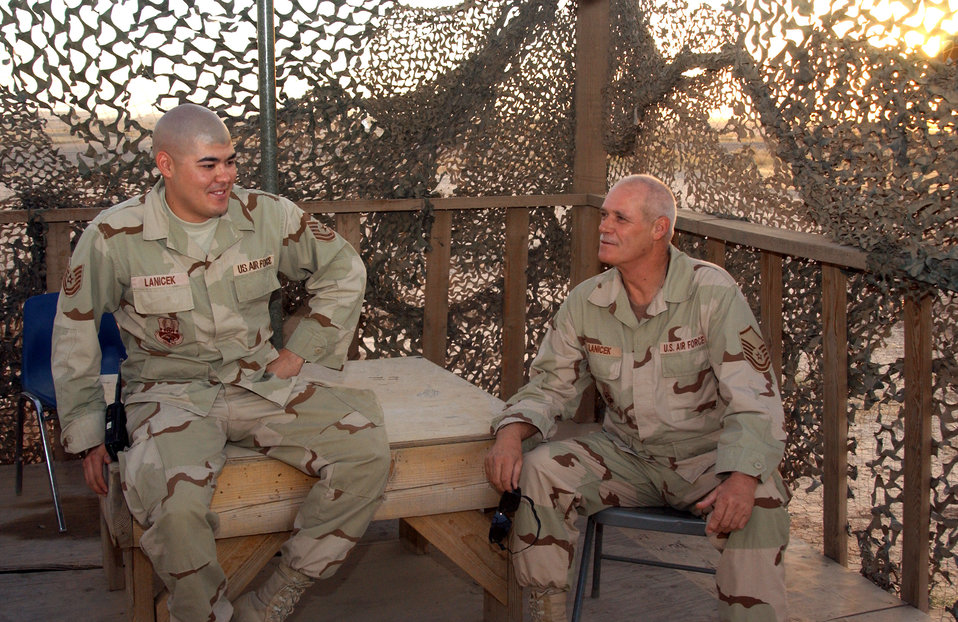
Father serves last combat tour with son in Iraq

Master Sgt. William Lanicek Sr. (right) and his son Tech Sgt. William Lanicek visit each other July 13 at Balad Air Base, Iraq. Sergeant Lanicek Sr., who will retire in two years, is deployed on his last air and space expeditionary force deployment together with his son at Balad AB. They are both assigned to the 332nd Expeditionary Maintenance Squadron. The Laniceks are Texas natives, and they are both deployed from Naval Air Station Joint Reserve Base in Fort Worth, Texas.